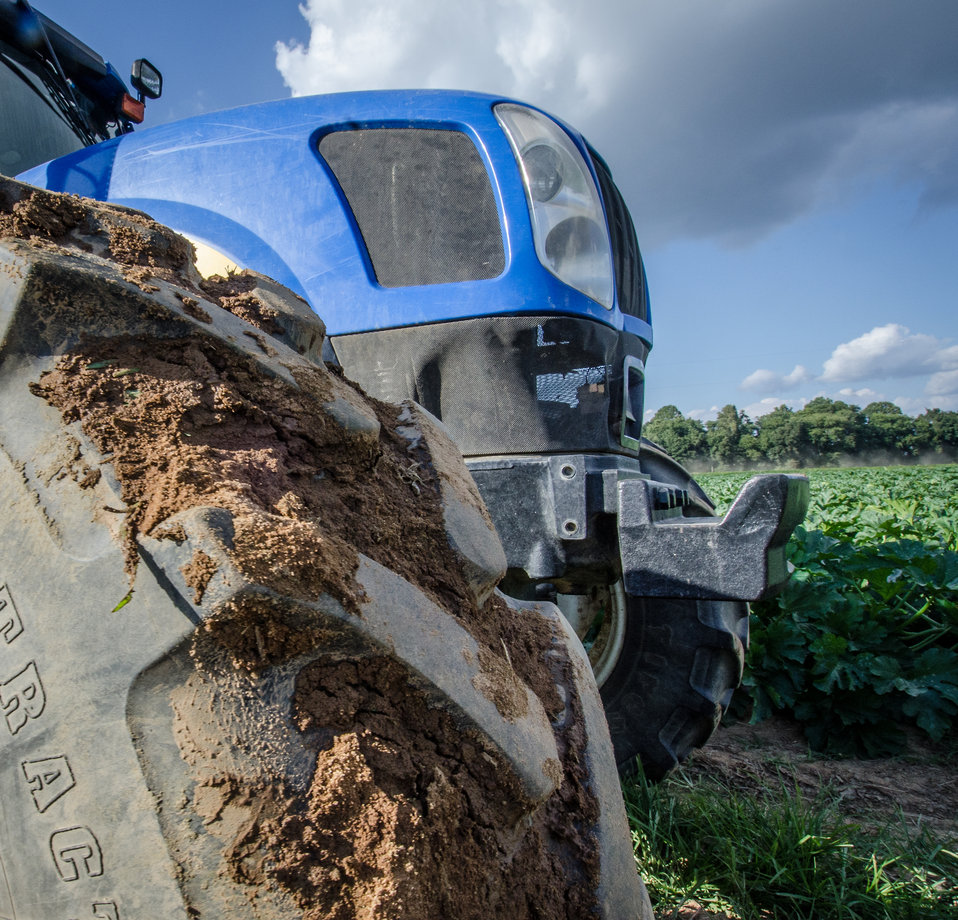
A tractor stops for a moment between rows of green zucchini squash at Kirby Farms, in Mechanicsville, VA, on Friday, Sept 20, 2013.
Kirby Farms is a third-generation family farm that covers 500 acres, and generates produce and grains on a year-around operation. The various stages of leaf, flower, and fruit can be seen on this one plant with an immature squash nearly ready for harvesting. Markets prefer the squash to be approximately eight inches in length when they are tender. Full-grown squash reach three feet in length and are more fibrous. Some recipes call for zucchini blossoms to be stuffed, fried, or baked, added to a soup, or used as a garnish over a meal. Kirby Farms devotes 200 acres of the farm to eggplant, spinach, beets, tomato, jalapeno peppers, melons and a variety of greens. Soybeans and small grain are grown on the remaining 300 acres. The fertile Virginia soil and their management practices, allows Kirby Farms to double and triple crop fields with rotational crop selection. Wholesalers, who buy from this farm, sell the produce to major supermarkets in the Mid-Atlantic region, from North Carolina to Maryland. Restaurateurs in the local area prepare and serve their harvest to patrons in the Greater Richmond Region.